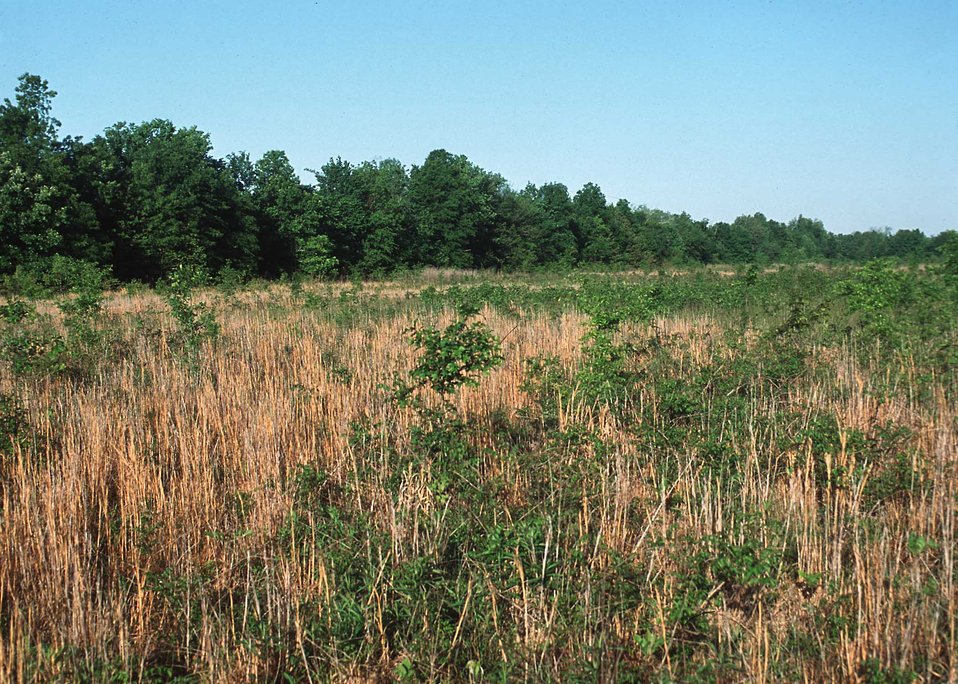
Hardwood trees planted as part of a bottomland hardwood wetlands restoration project in central Mississippi.